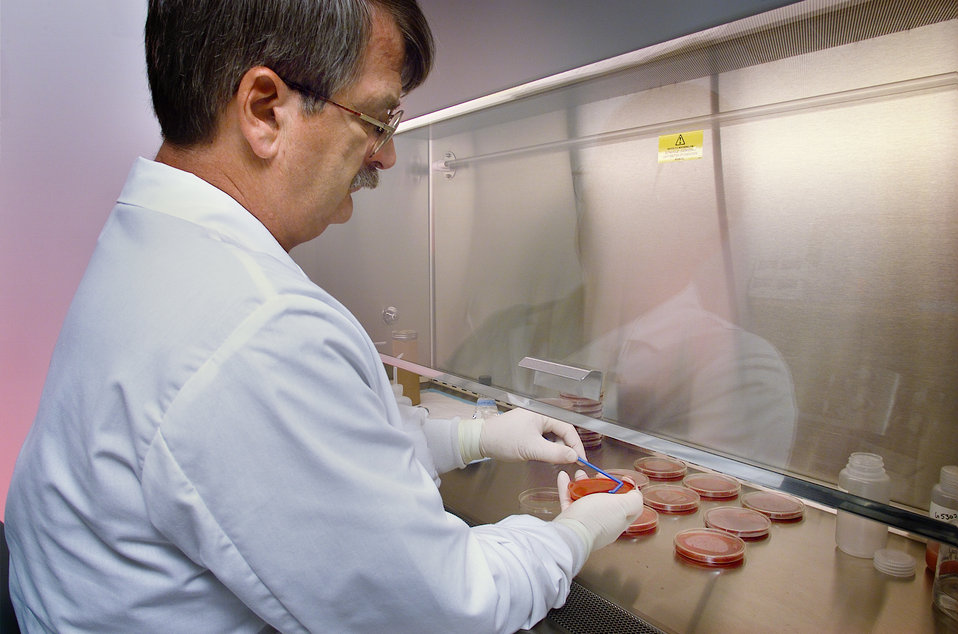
Arnold Steigerwalt, a research chemist with the Centers for Disease Control's Meningitis and Special Pathogens Branch (MSPB) in the National Center for Infectious Diseases (NCID), was shown here as he was performing a DNA-DNA hybridization analysis in one of the CDC's laboratories.